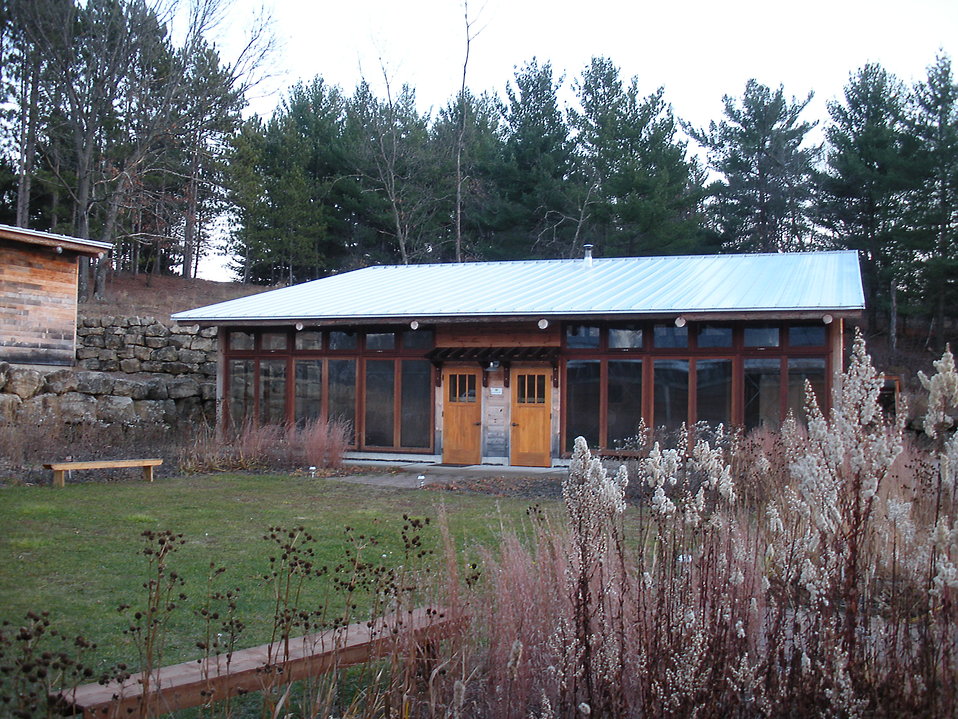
The Leopold Center 2